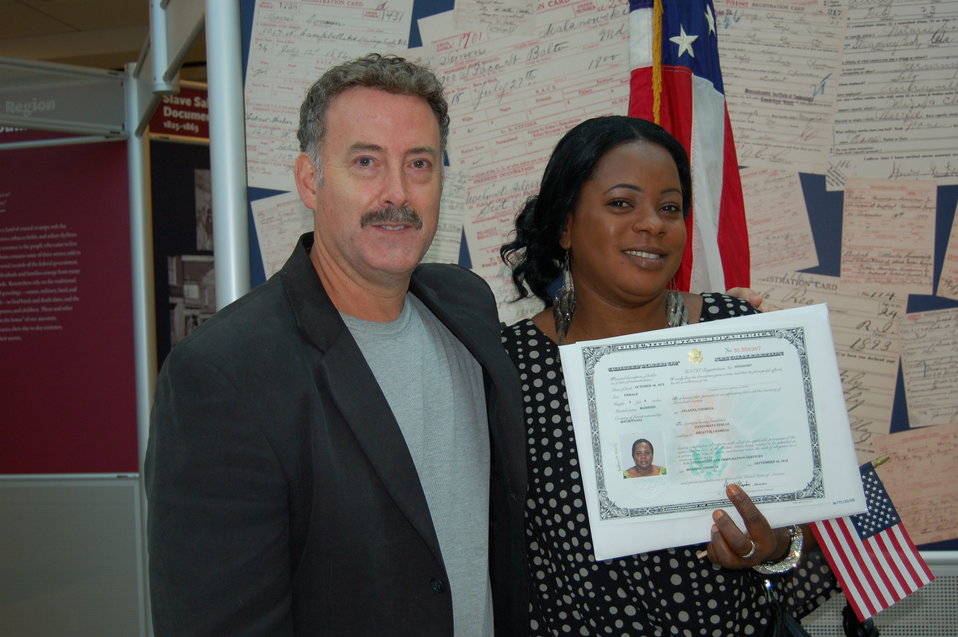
New Citizens